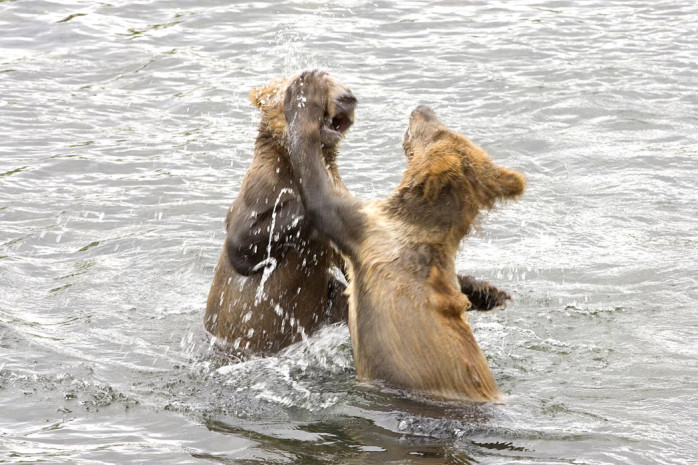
Alaska brown bears

Brown bear cubs playing, Alaska Region